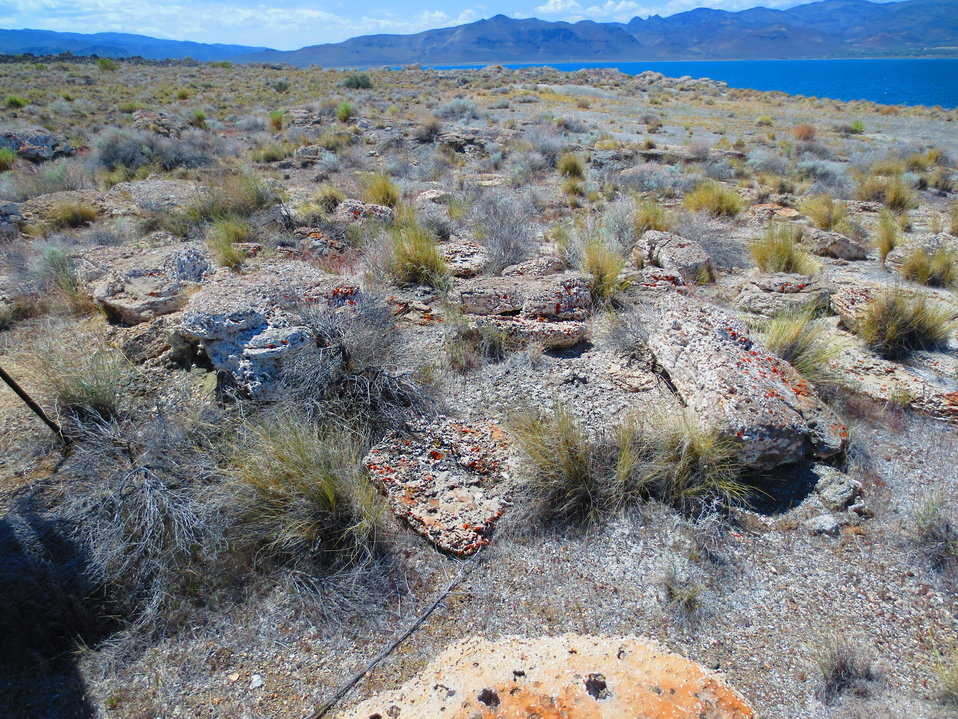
Closed to the public

Anaho Island NWF is closed to the public and shows little change since it became a National Wildlife Refuge in 1913.